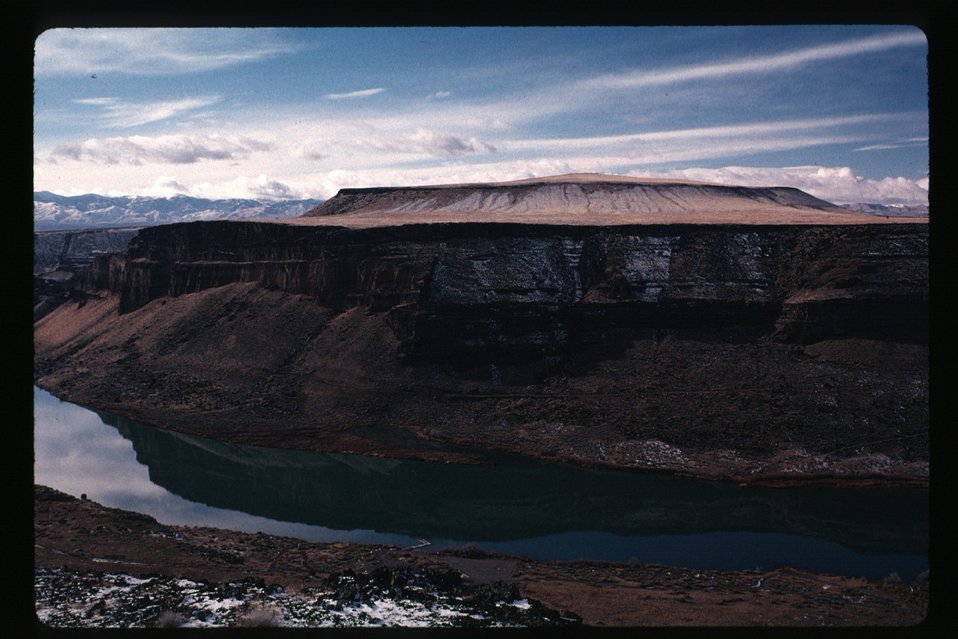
Scenic Birds of Prey National Conservation Area BOP Owyhee Field Office LSRD Lower Snake River District